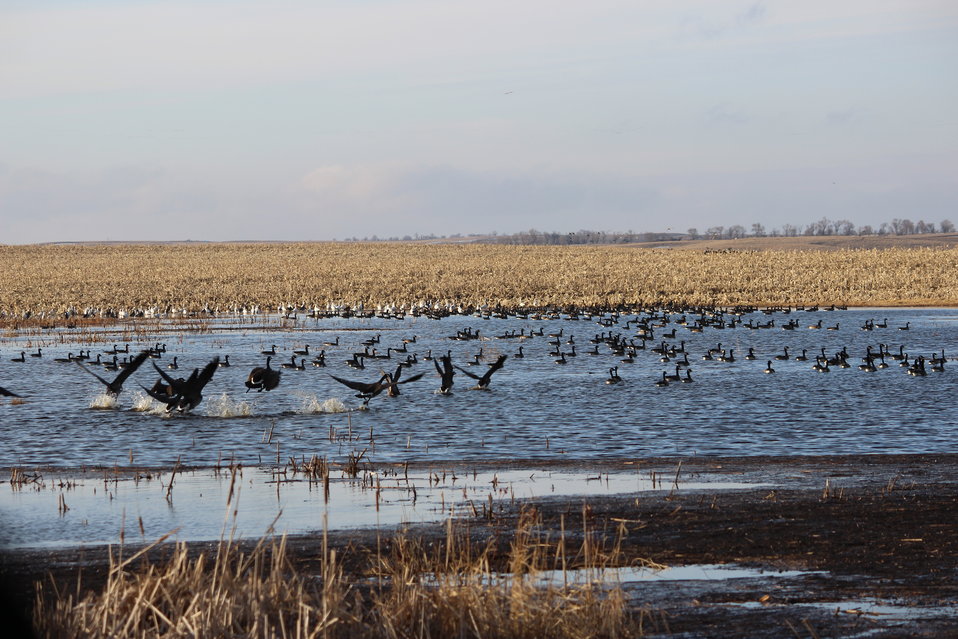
Geese Galore

These were some of the first geese seen on a March day in the Kulm Wetland Management District in North Dakota. They are using the water from snow melt in temporary wetlands because much of the water on large wetlands and lakes is still frozen. This area saw over 3 feet of ice on many lakes this winter.